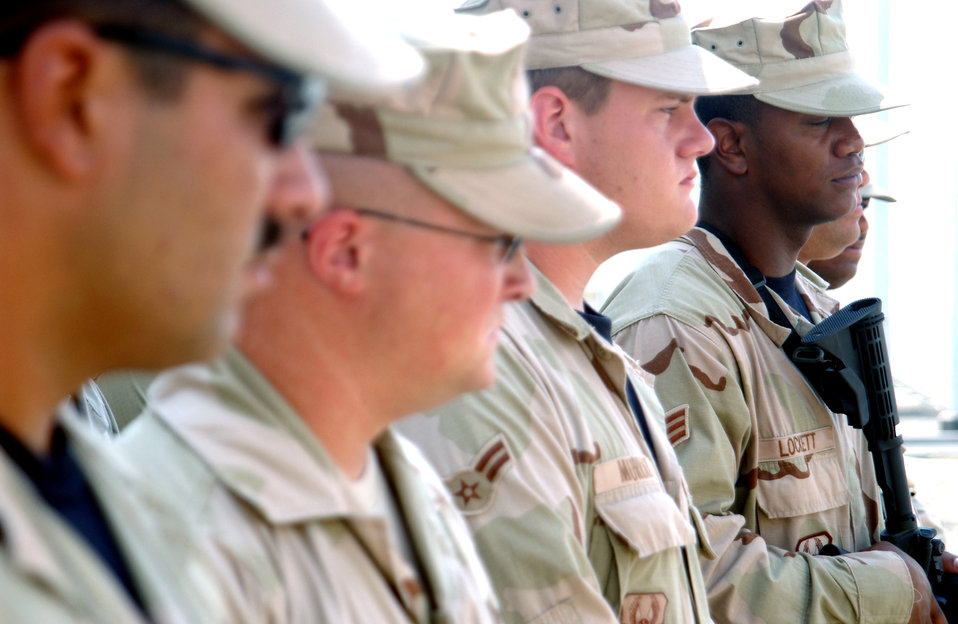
Deployed operations

Airmen from the 380th Expeditionary Security Forces Squadron listen to orders from their flight chief during a